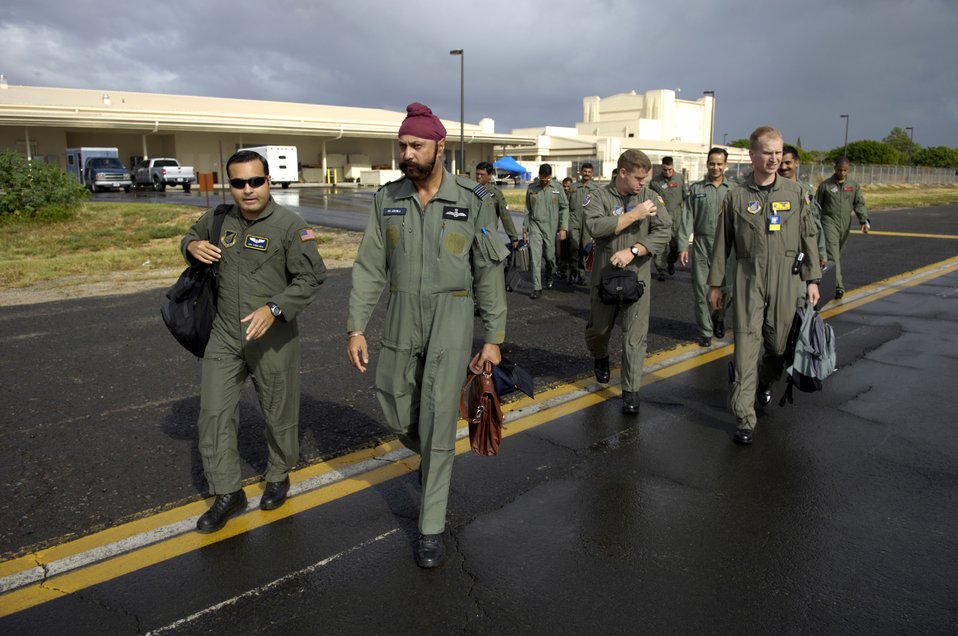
Airmen fly with Indian air force counterparts

Airmen from the 15th Airlift Wing walk out to an Indian IL-76 medium cargo aircraft with the aircraft's crew for a training mission at Hickam Air Force Base, Hawaii, Sept. 20.